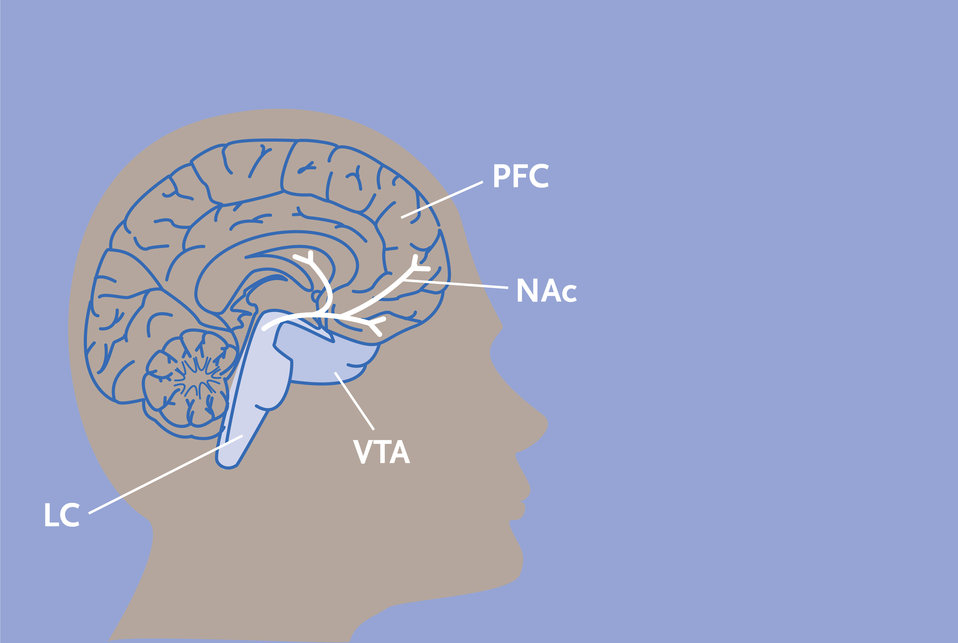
Brain Image

The mesolimbic reward system